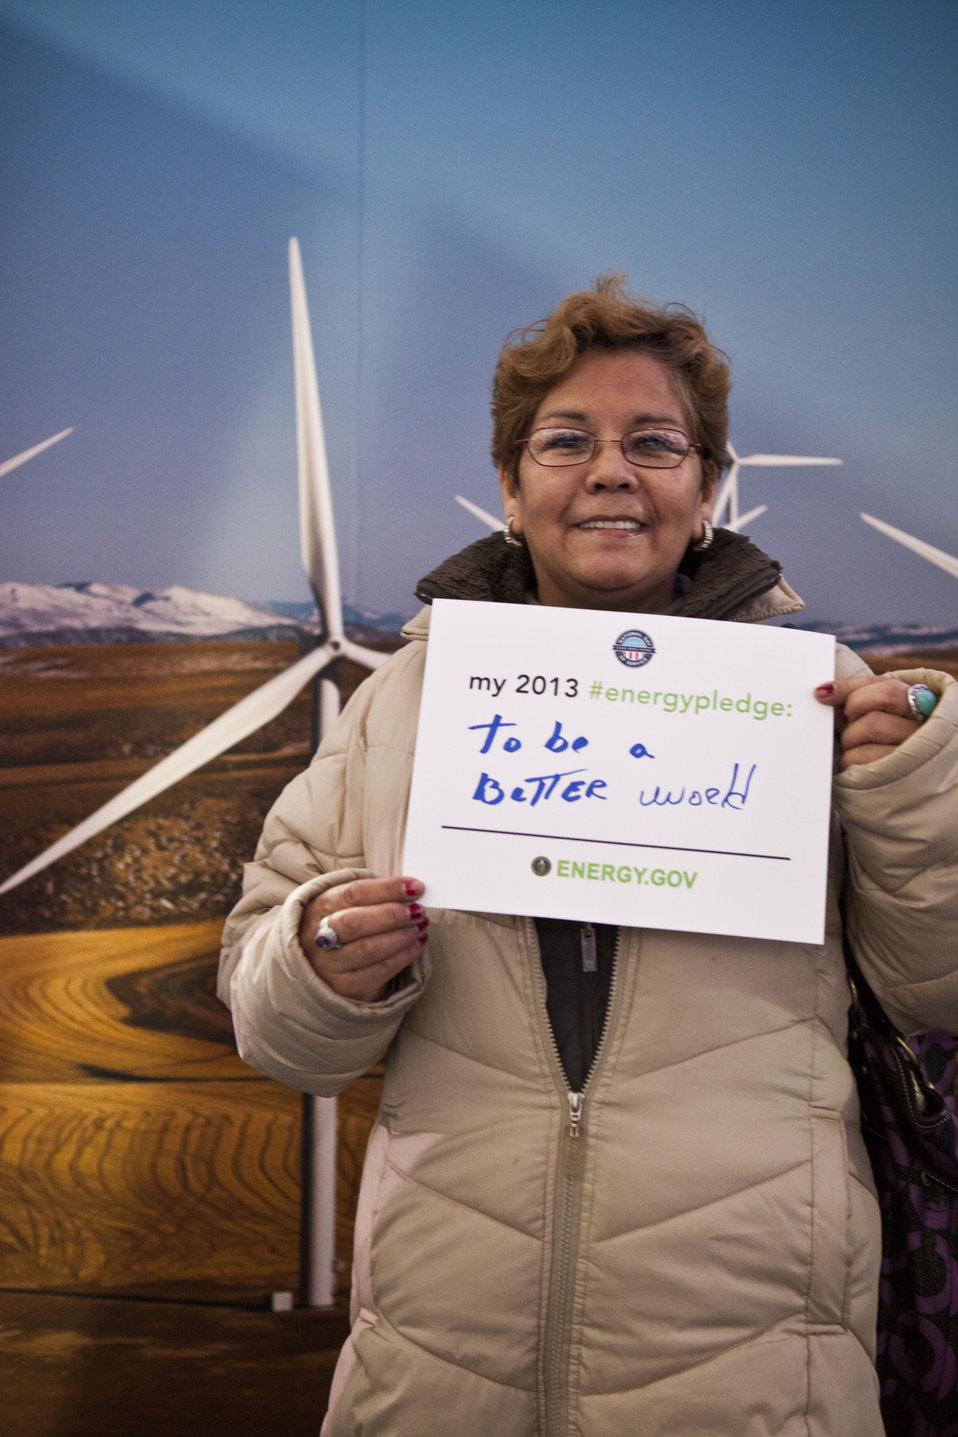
What's your #energypledge?